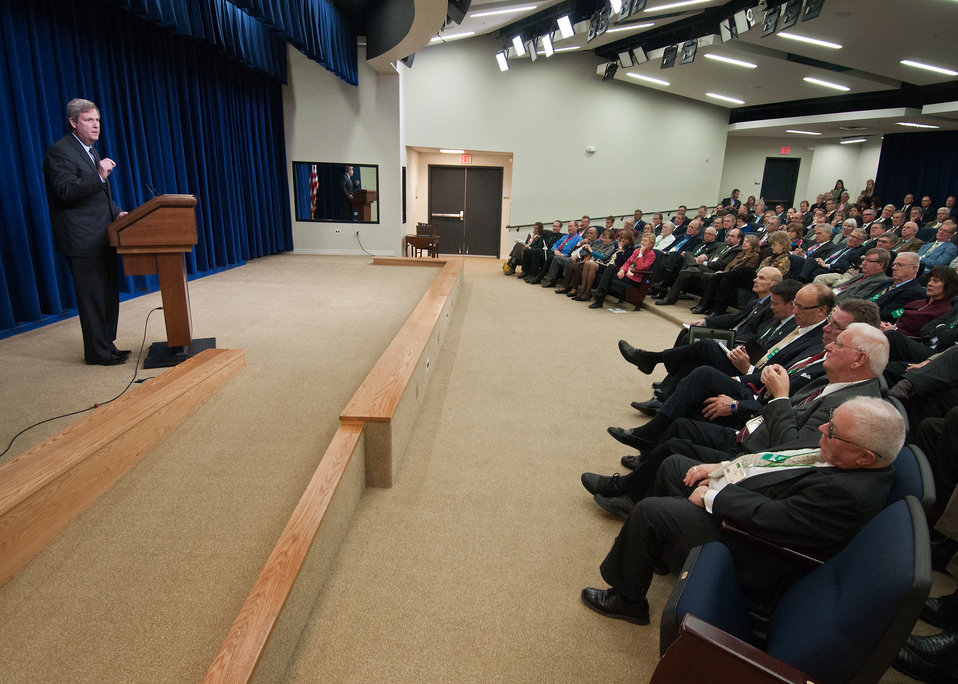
Agriculture Secretary Tom Vilsack spoke to the 11th Annual Meeting of State Agriculture and Rural Leaders at the Eisenhower Executive Office Building in Washington, D.C., on Friday, January 6, 2012. Accompanying Secretary Vilsack were members of his subcabinet, Dr. Elisabeth Hagen, Undersecretary, Food Safety, Dr. Catherine Woteki, Chief Scientist, Undersecretary, Research Education and Economics, Dave White, Chief, Natural Resources Conservation Service and Doug O’Brien, Deputy Undersecretary, Rural Development. Secretary Vilsack and his cabinet members discussed a variety of agriculture and rural development topics affecting rural America.